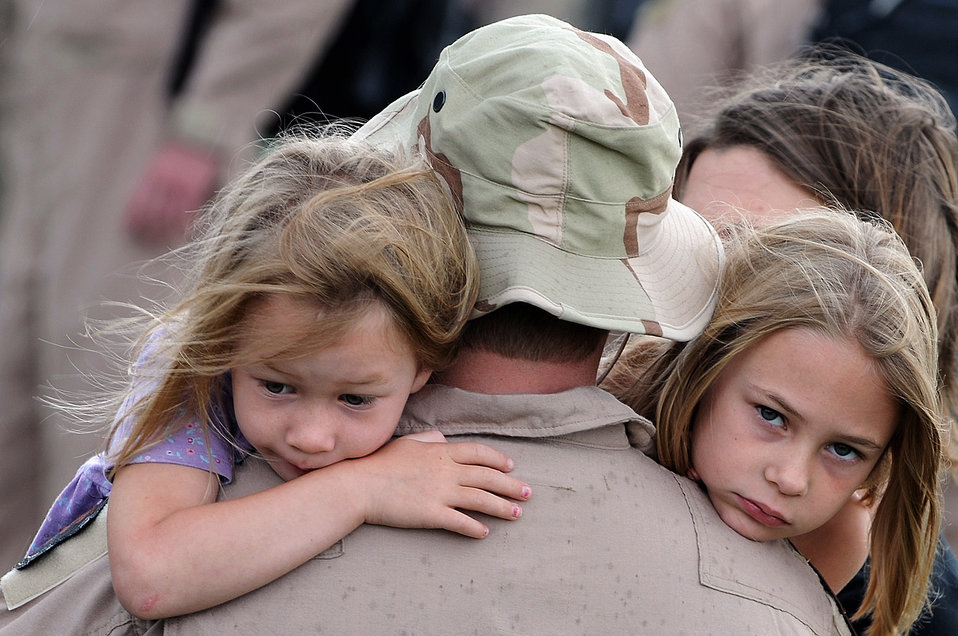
Parting is such sweet sorrow

1st. Lt. William Jacks hugs his daughters Rachel (left) and Anna July 22 at Ellsworth Air Force Base, S.D. Lieutenant Jacks, a 34th Bomb Squadron B-1B Lancer pilot, will be deployed to Southwest Asia in support of military operations being conducted in various locations worldwide.